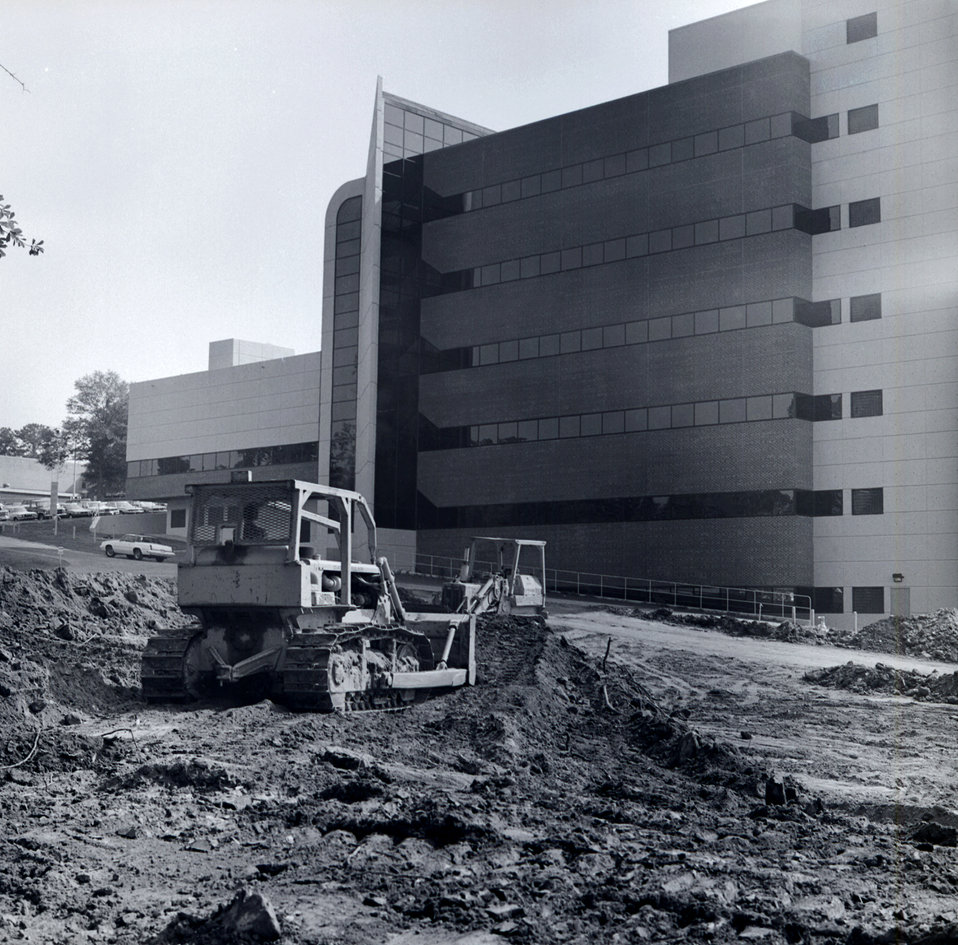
This late 1980s photograph showed the construction, which was taking place outside of what would become the Centers for Disease Control's, Building 15 on the Roybal Campus located in Atlanta, Georgia.